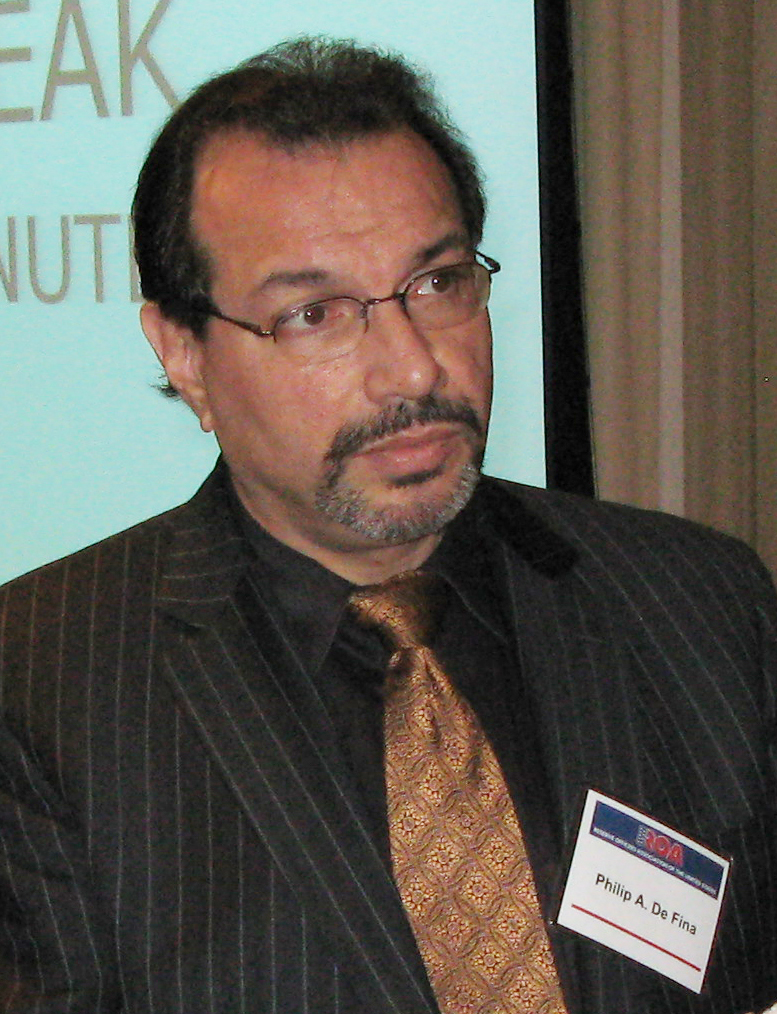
Brain therapies offer hope to injured troops

Dr. Philip A. DeFina, chief executive and scientific officer at the non-profit International Brain Research Foundation Inc., in Edison, N.J., responds to questions from reporters at the Reserve Officers Association-sponsored seminar on military mental healthcare held in Washington, D.C., March 23. Dr. DeFina, an Army veteran, was one of several civilian and military guest speakers who attended the seminar.